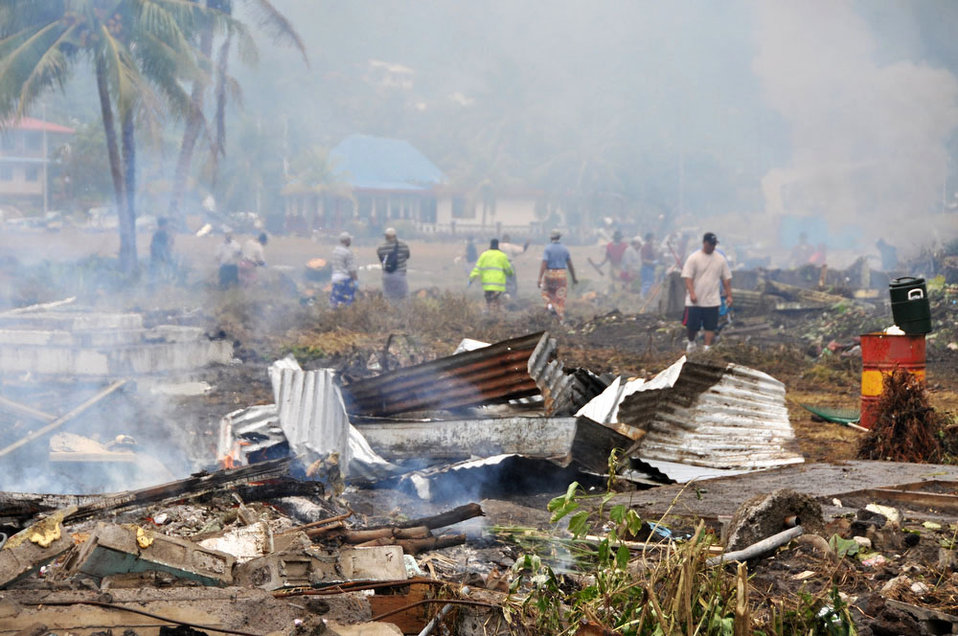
Hawaii Guard members assess damages in American Samoa

American Samoans pick-up the trash and debris from their homes and businesses Oct. 1, 2009, in Pago Pago, American Samoa. The island nation was struck Sept. 29 by an 8.3 magnitude earthquake generating 15-foot waves and destroying whole villages.